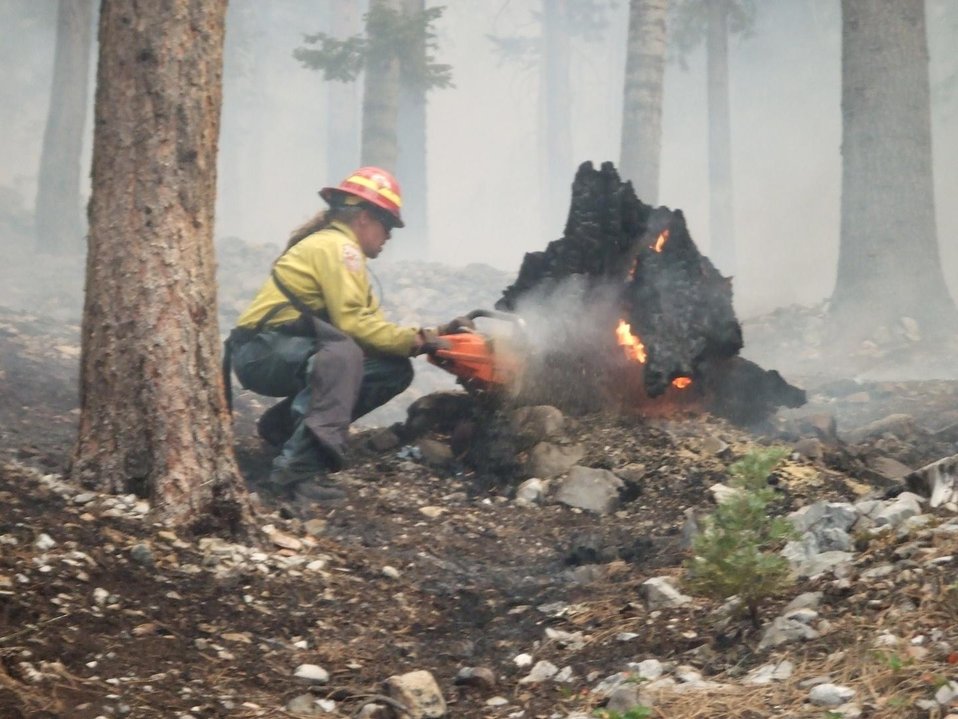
Firefighter works to extinguish remaining hot spots from the Carpenter Fire in the Toiyabe National Forest near Humboldt, NV. The Carpenter Fire in the Toiyabe National Forest near Humboldt, NV was caused by a lightning strike on Jul. 1, 2013. The fire has consumed nearly 27,881acres and is presently 70% contained.